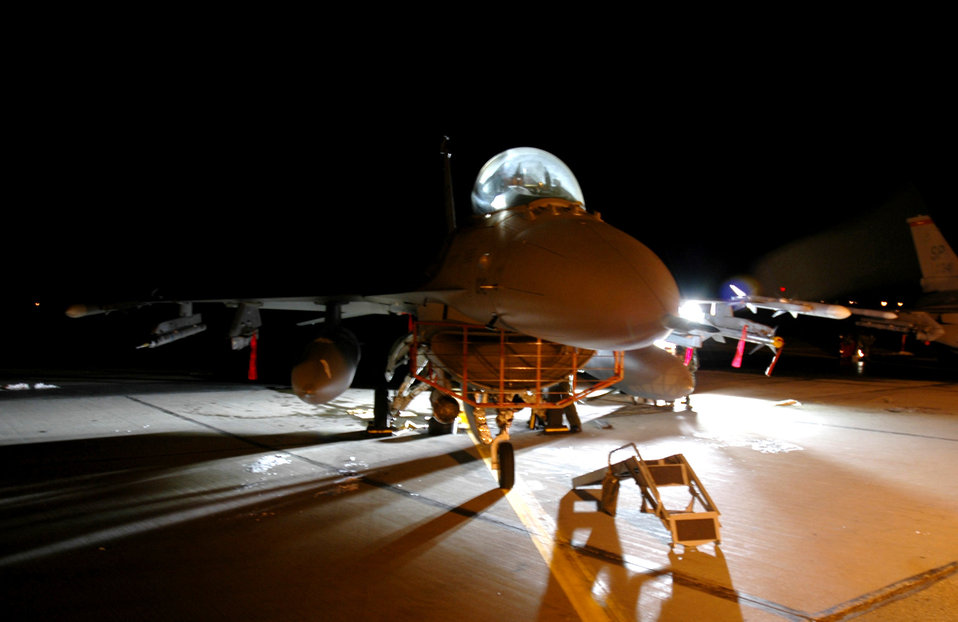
Maintainers keep Cope Thunder going

EIELSON AIR FORCE BASE, Alaska -- Done for the night, an F-16 Fighting Falcon from the 22nd Fighter Squadron, Spangdahlem Air Base, Germany, sits on the flightline here. Spangdahlem Airmen are part of the 1,000 active duty and Air National Guard Airmen and 87 aircraft taking part in exercise Cope Thunder 06-1, which ends Oct. 21. Pacific Air Forces hosts the two-week air combat training exercise.